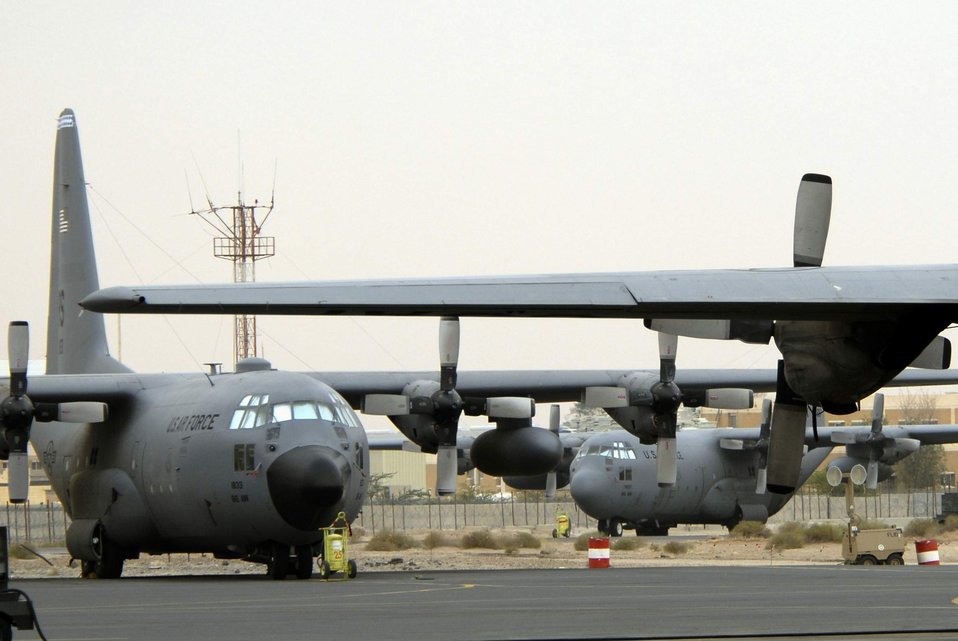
May 12 airpower summary: C-130s continue support

C-130 Hercules aircraft wait for an airlift mission April 17 at an air base in Southwest Asia. These C-130s transport coalition forces and equipment throughout the area of responsibility in support of operations Enduring Freedom and Iraqi Freedom